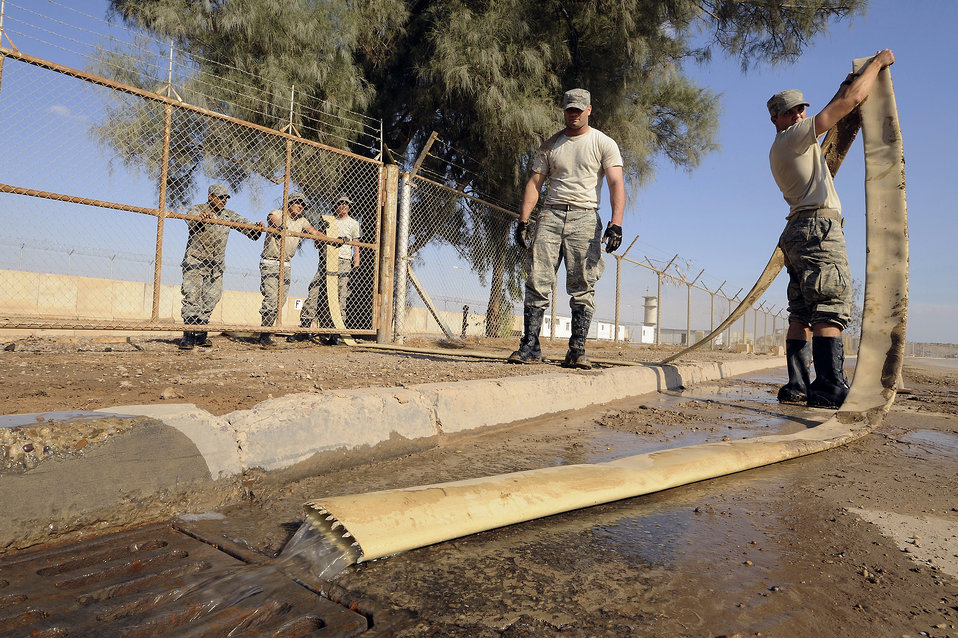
Did someone call a plumber?

Airman 1st Class Gregory Hayes (right) drains a hose as other Airmen from the 332nd Expeditionary Civil Engineer Squadron watch Nov. 3 at Joint Base Balad, Iraq. The Airmen are utility system technicians with the 332nd Expeditionary Civil Engineer Squadron. Airman Hayes, a native of Lancaster, S.C., is deployed from Schriever Air Force Base, Colo.